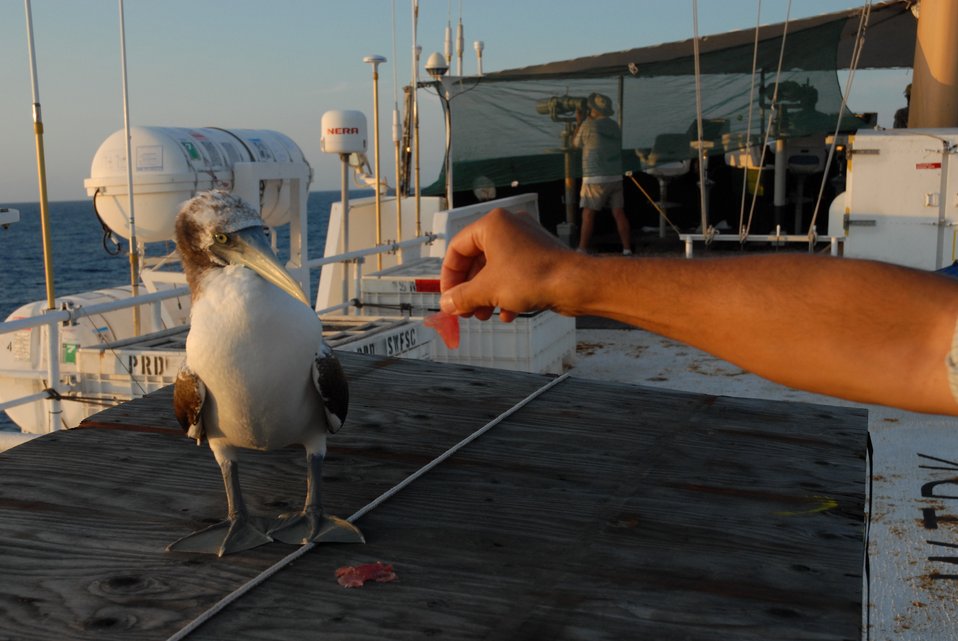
Booby debating whether to take offered bit of fish from friendly scientist.